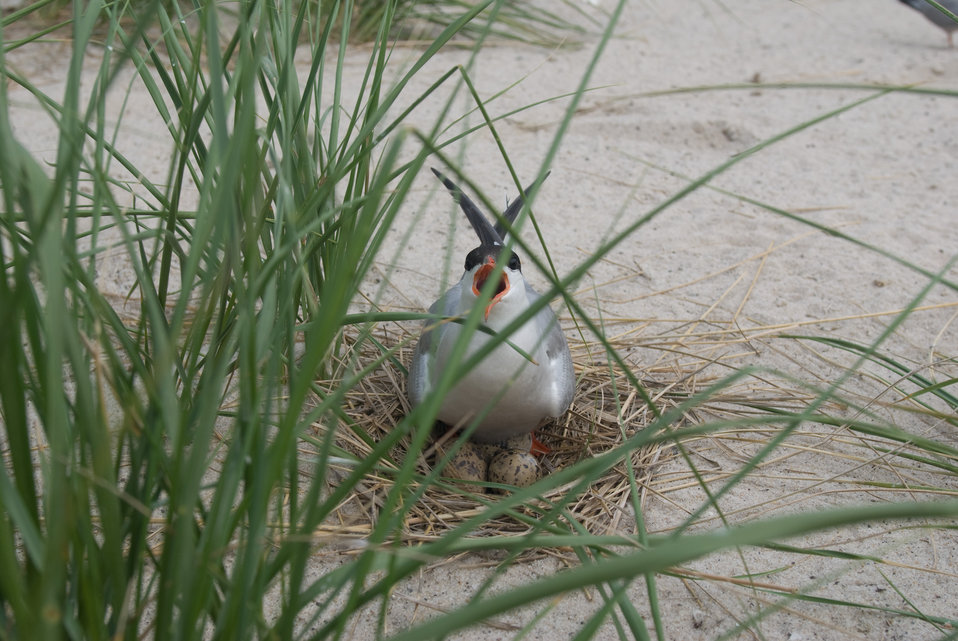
Tern at Monomoy National Wildlife Refuge

A tern at Monomoy National Wildlife Refuge in Massachusetts.